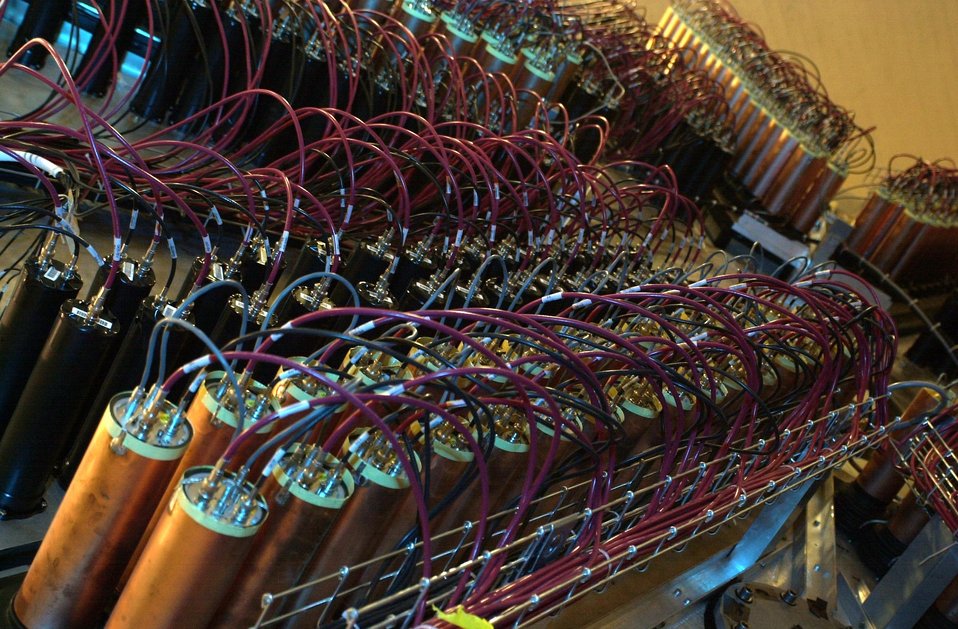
ANGLED VIEW OF THE PHOTO MULTIPLIER TUBES (PMTS) USED FOR THE GO DETECTOR.

THE JEFFERSON LAB IS BUILT FOR NUCLEAR PHYSICS RESEARCH. SCIENTISTS USE SUPERCONDUCTING ELECTRON ACCELERATING TECHNOLOGY AT THE LAB'S CONTINUOUS ELECTRON BEAM ACCELERATOR (CEBAF) TO CONDUCT EXPERIMENTS. HIGH ENERGY ELECTRON BEAMS FROM THE ACCELERATOR ALLOWS SCIENTISTS TO PROBE THE ATOM'S NUCLEUS, REVEALING HOW QUARKS MAKE UP PROTONS, NEUTRONS, AND THE NUCLEUS ITSELF.